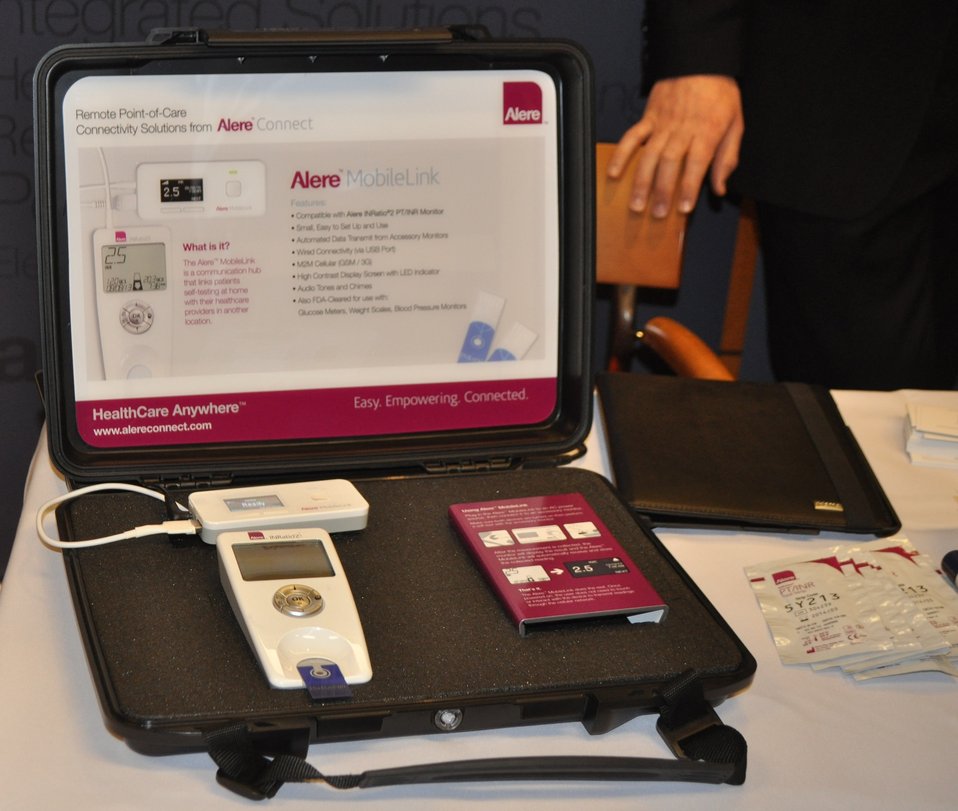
12.6.13 mHealth Innovation Expo

FCC mHealth Innovation Expo.